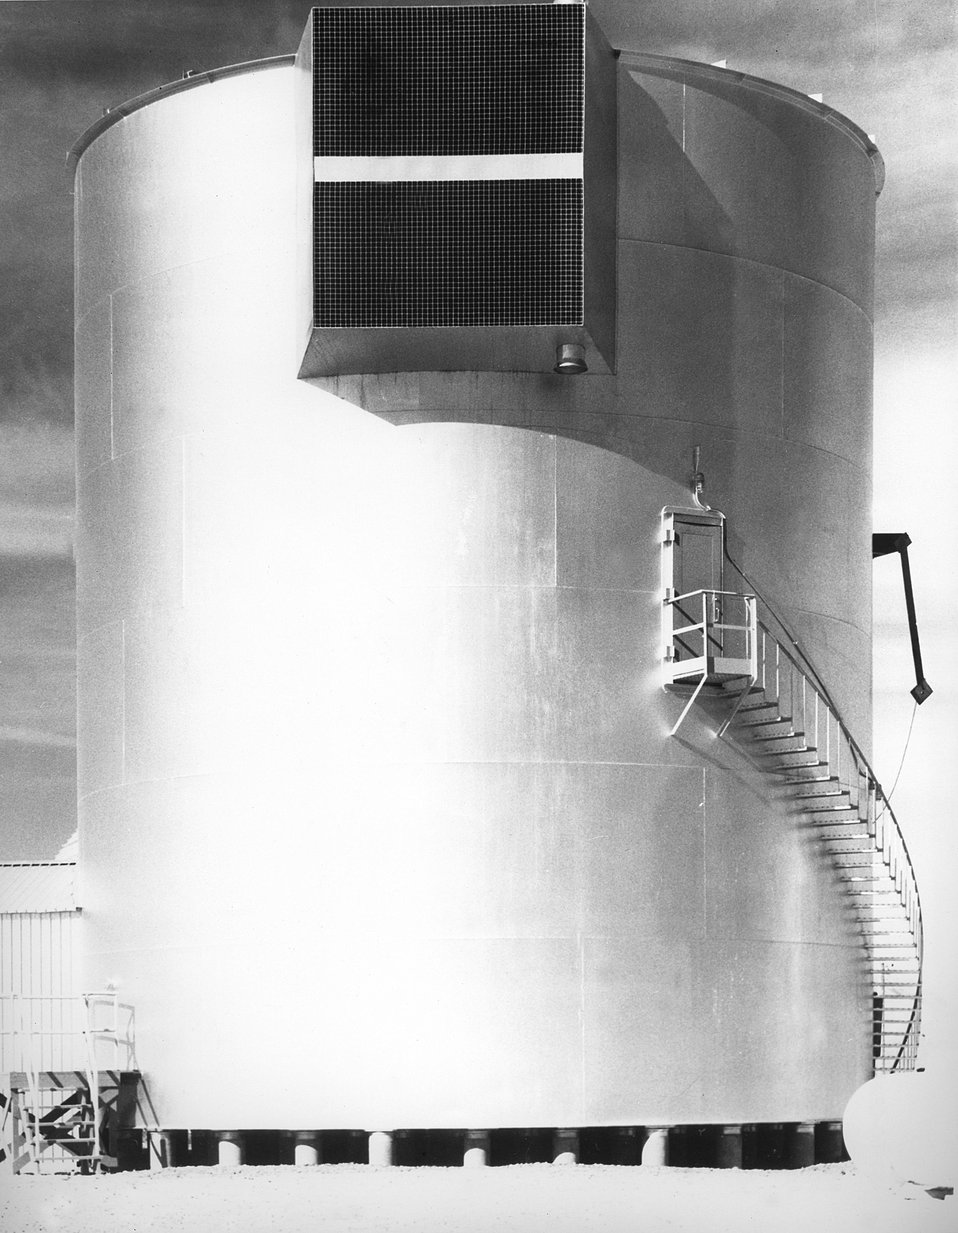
View showing exterior view looking towards west showing Argonne Low Power Reactor Containment Tank.
c.1960